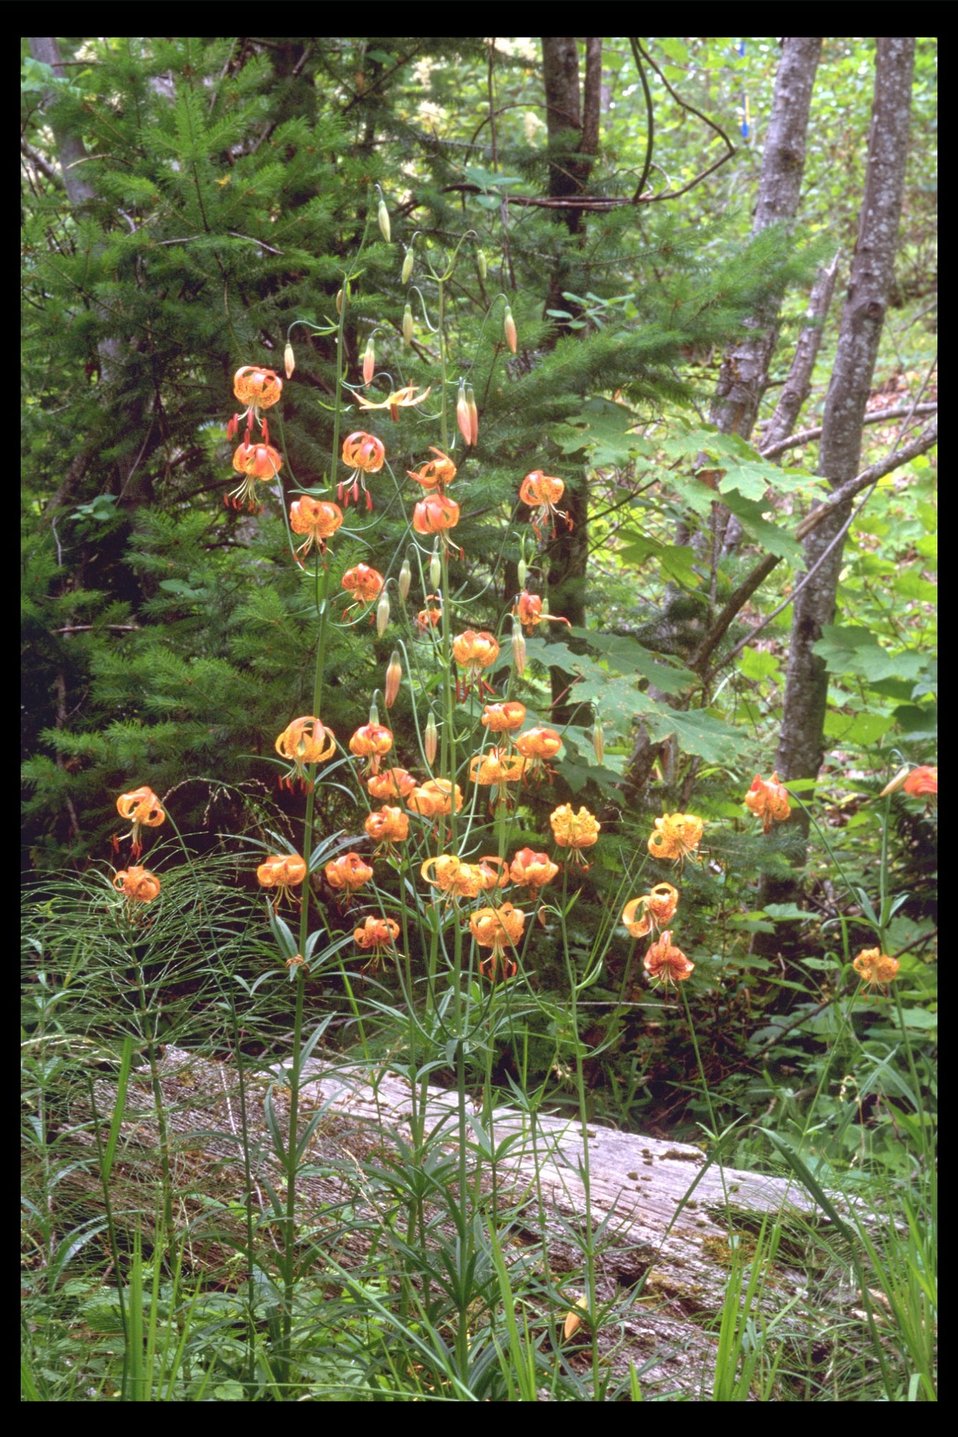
Volmer's Lily along Upper Trail Creek.